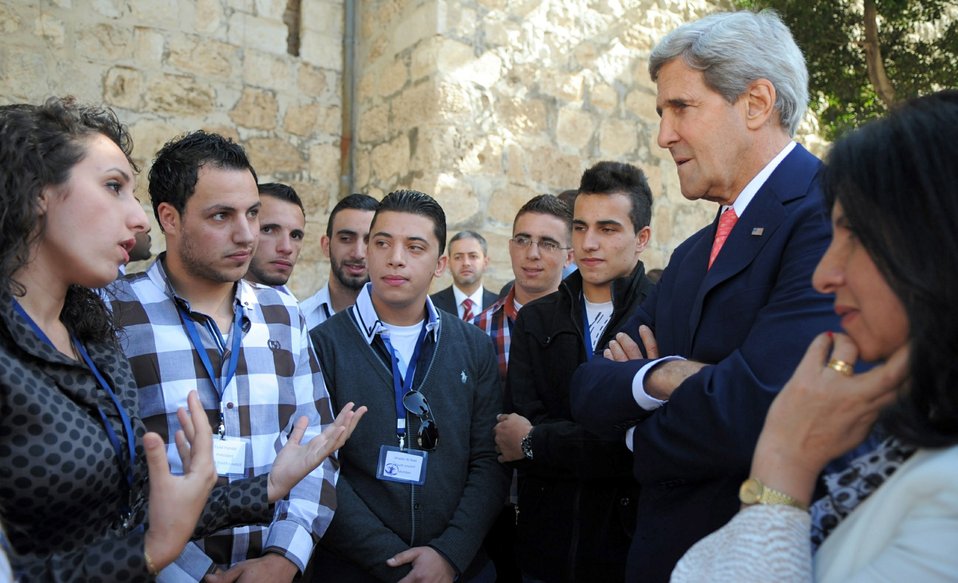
Secretary Kerry Speaks With Palestinian Youth in Bethlehem

U.S. Secretary of State John Kerry, joined by Bethlehem Mayor Vera Baboun, listens to a member of a USAID-sponsored Local Youth Council during a visit to the West Bank on November 6, 2013.